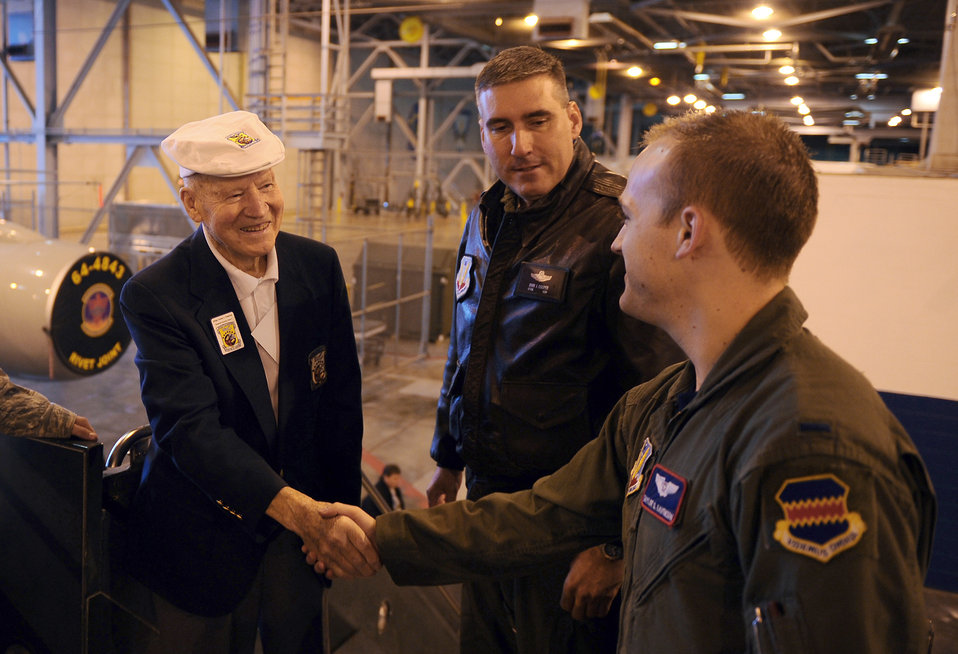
Doolittle Raiders

Doolittle Raider David Thatcher, who was an engineer-gunner on crew 7, shakes hands with 1st Lt. Taylor Eavenson as Lt. Col. John Cooper looks on April 15, 2011, at Offutt Air Force Base, Neb. The five surviving Doolittle Raiders visited there as part of their 69th annual reunion, which took place this year in Nebraska from April 14 through 17. Lieutenant Eavenson is an electronic warfare officer with the 38th Reconnaissance Squadron. Colonel Cooper is the 55th Operations Group deputy commander.